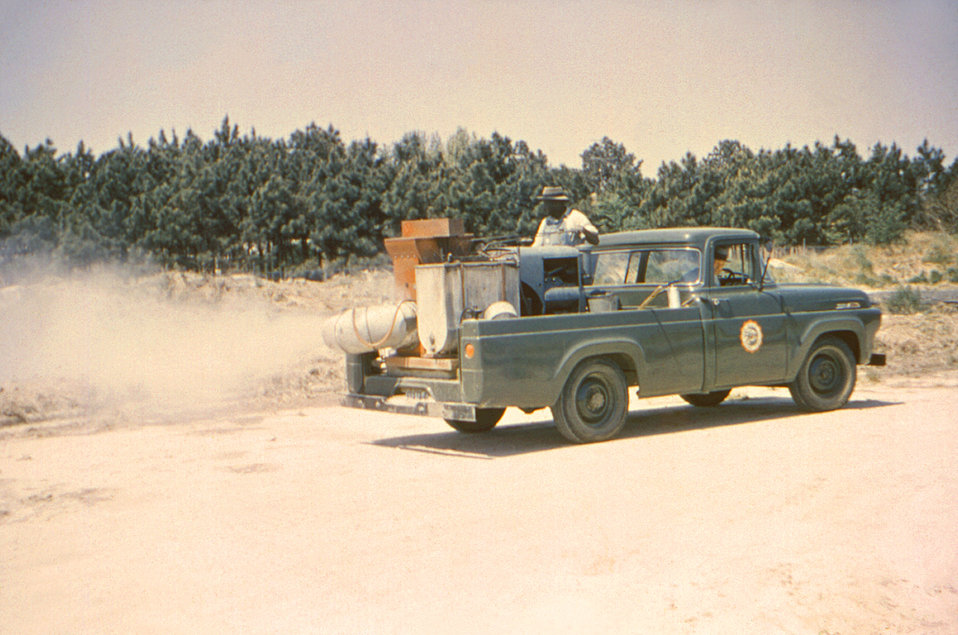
Driving a pick-up truck equipped with a Buffalo turbine blower, this historic 1962 image depicted two Rocky Mount, North Carolina men in the process of dispersing BHC dust, also known as Lindane, an agricultural insecticide, which in this instance, was being used to control the local population of Culex salinarius mosquitos, and filter flies, breeding in a nearby sludge pond.